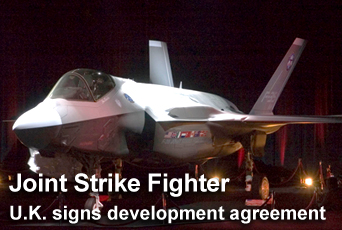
DOD, UK sign next stage Joint Strike Fighter agreement

The United Kingdom signed a memorandum of understanding Dec. 12 in Washington to become the fifth nation to sign the Joint Strike Fighter production, sustainment, and follow-on development agreement.